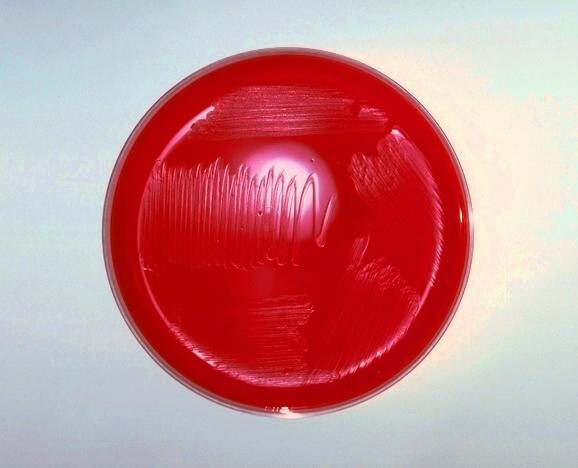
Blood agar plate culture of Eikenella corrodens.